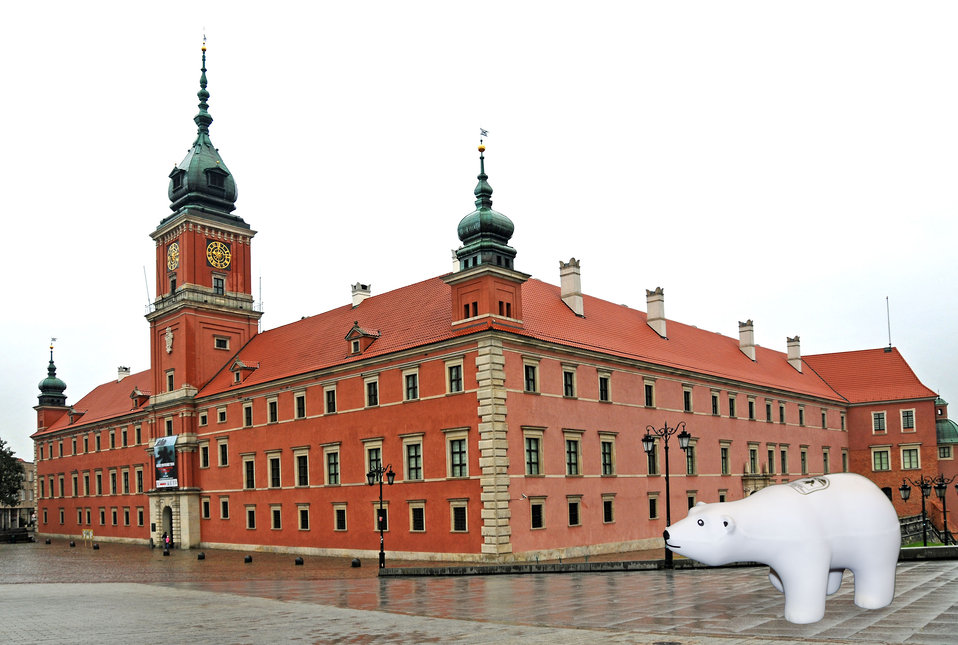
Warsaw, Poland

After a long flight, our polar bear is ready to start his journey! He’s really drinking in the history in this beautiful capital city. This palace was once home to kings and queens and has been plundered, destroyed and rebuilt multiple times. Can you guess where our polar bear is?

Answer: The Royal Palace in Warsaw, Poland.

Original photo taken by Dennis Jarvis (CC BY-SA 2.0), Warsaw, Poland, 2009.